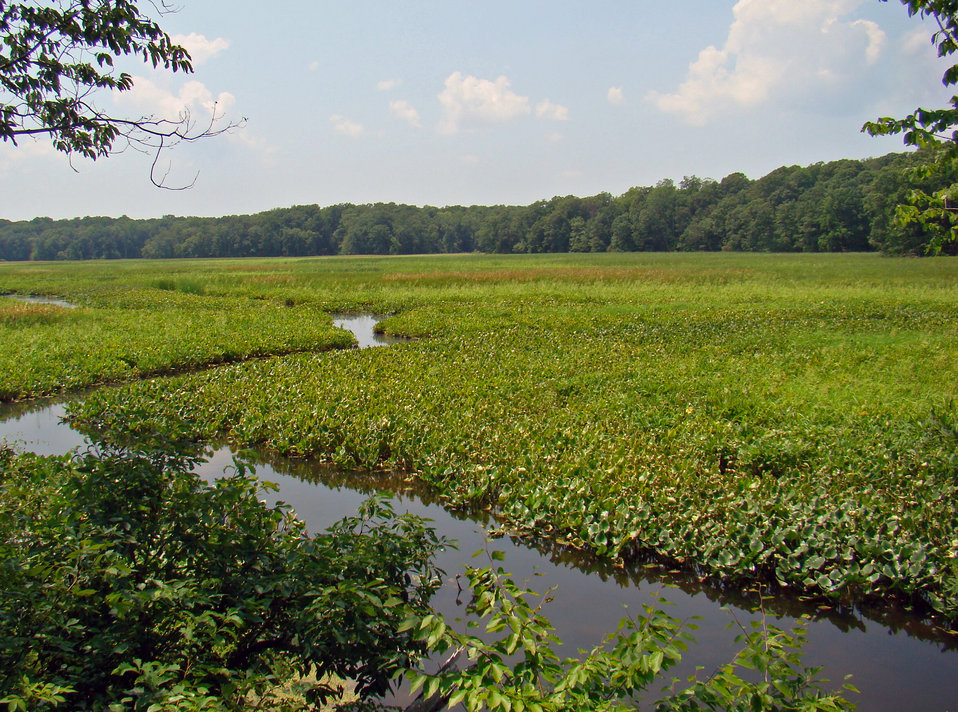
Great Marsh

Mason Neck National Wildlife Refuge, VA.